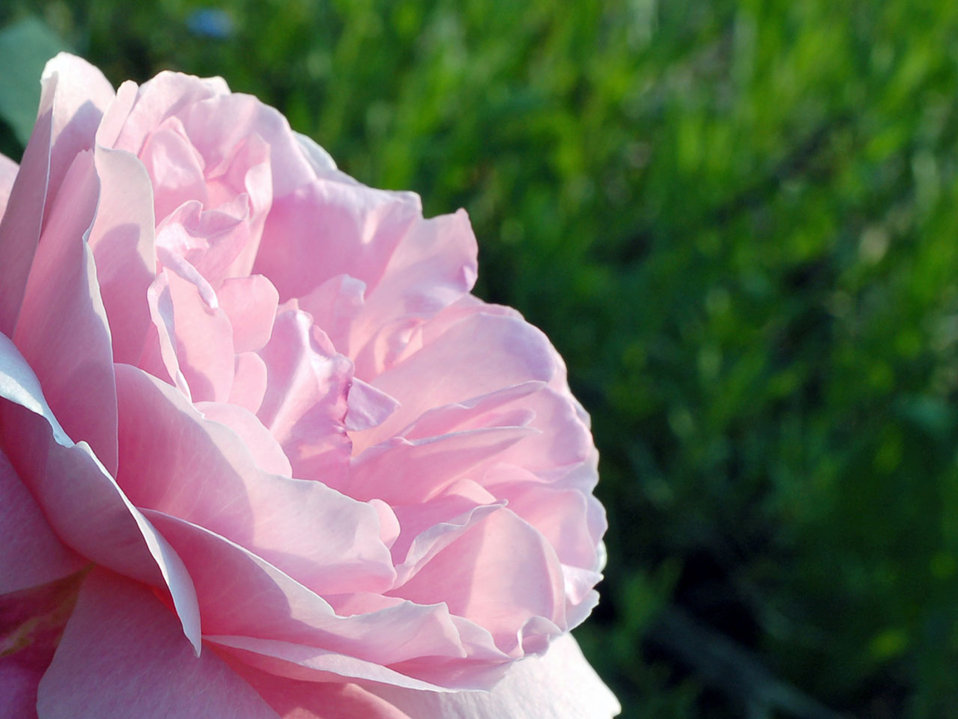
Pink rose closeup

Pink garden rose closeup.